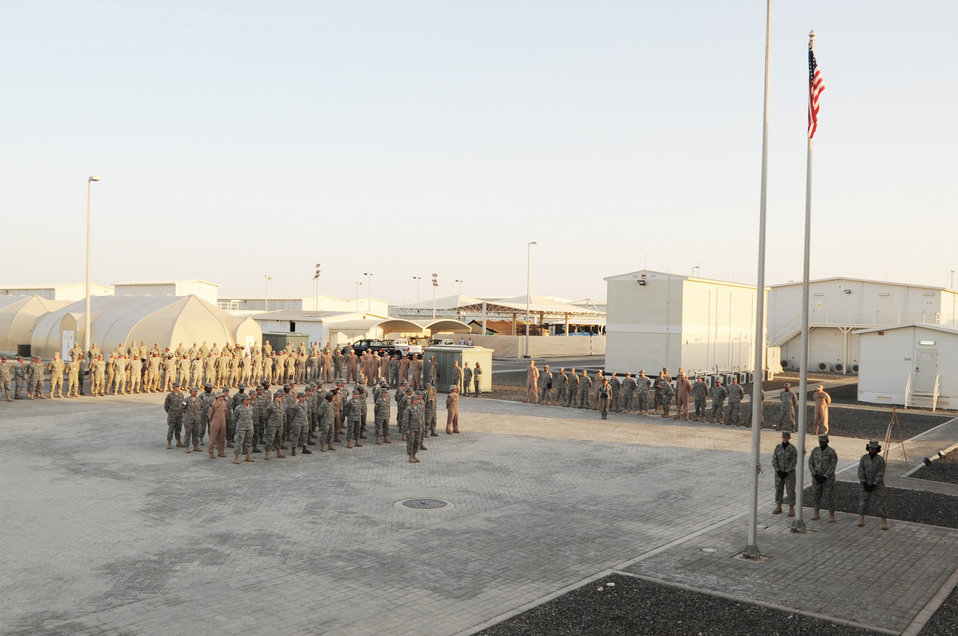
Women's History Month

Female Airmen and Soldiers representing the 380th Air Expeditionary Wing stand in formation March 19, 2010, during a Women's History Month retreat ceremony at an air base in Southwest Asia. The formation honored women who serve in the military, past and present.